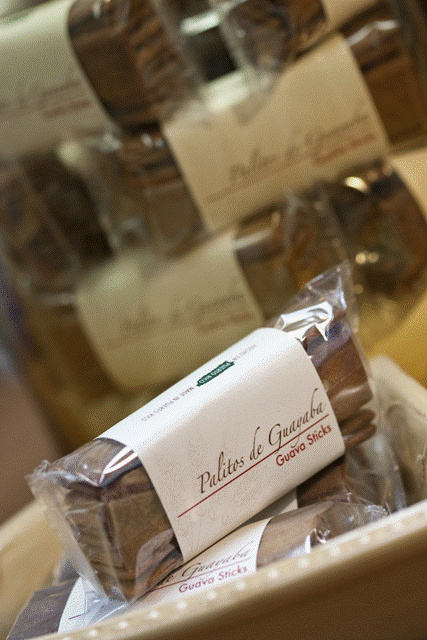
RECALLED - Guava Sticks

January 3, 2012 - Product Recall - Enhorabuena! Issues Allergy Alert On Undeclared Milk, Wheat, Tree Nuts, and Eggs in “Palitos de Guayaba” (Guava Sticks).